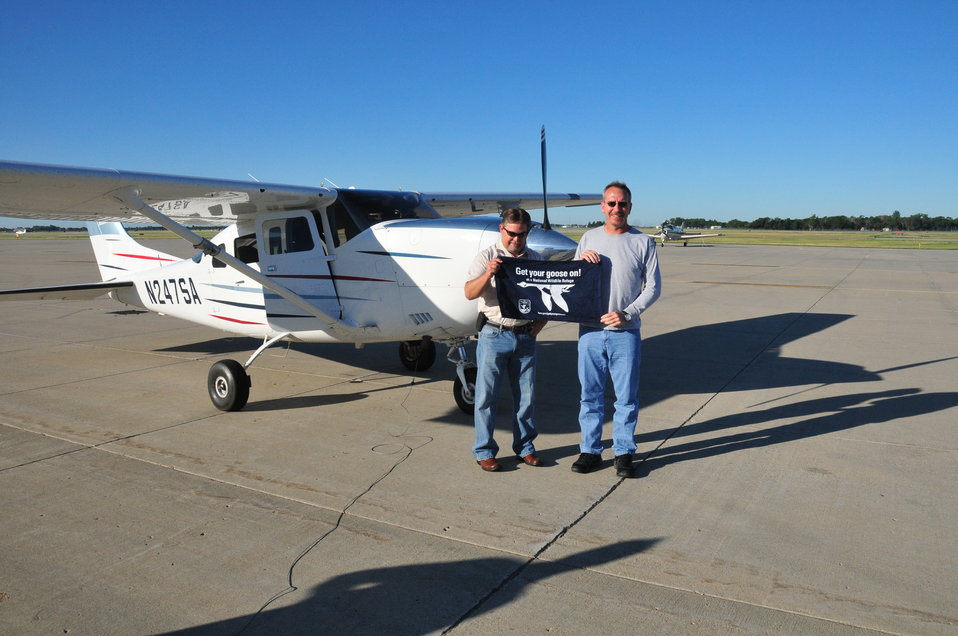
Get Your Goose On!

The national meeting for regional chiefs of the National Wildlife Refuge System is held three times a year in different locations around the country. This 2012 meeting took place in McPherson County, South Dakota, and focused on the Dakota Grassland Conservation Area.

This photo was taken on the Wade Weiszharr and Family Ranch, which contains perpetual U.S. Fish and Widlife grassland and wetland easements. This site is also located in the heart of Prairie Pothole Region, making it extremely productive migratory bird habitat and a great place to “Get your goose on!”

Here Aaron Archibeque and Jeff Ruppert 'get their goose on' next to the region's Cessna 206! This aircraft is primarily used to monitor grassland and wetland easements in the area.